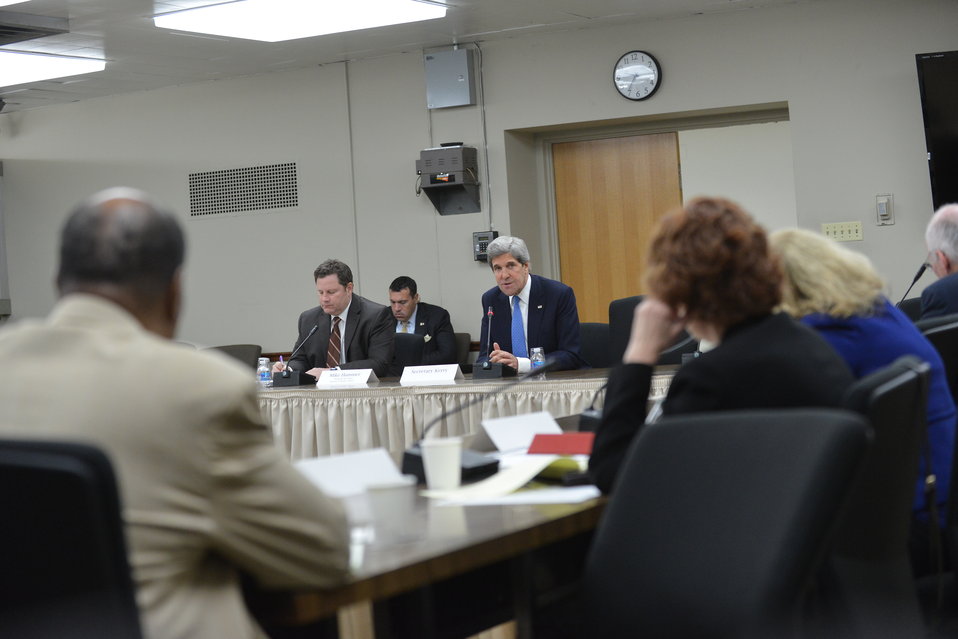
Secretary Kerry Delivers Remarks at the National Conference of the Association of Opinion Journalists

U.S. Secretary of State John Kerry delivers remarks at the National Conference of the Association of Opinion Journalists at the U.S. Department of State in Washington, D.C., on April 29, 2013.